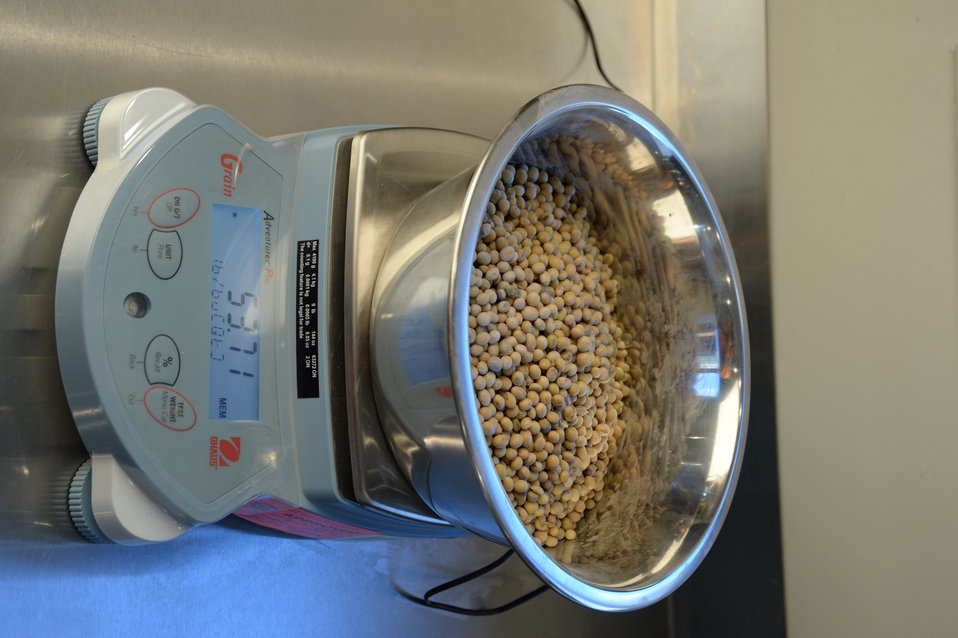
Grain is weighed at the U.S. Department of Agriculture (USDA) Grain Inspection, Packers and Stockyards Administration (GIPSA) Federal Grain Inspection Service (FGIS) laboratory in New Orleans, LA on Tuesday, Nov. 19, 2013.